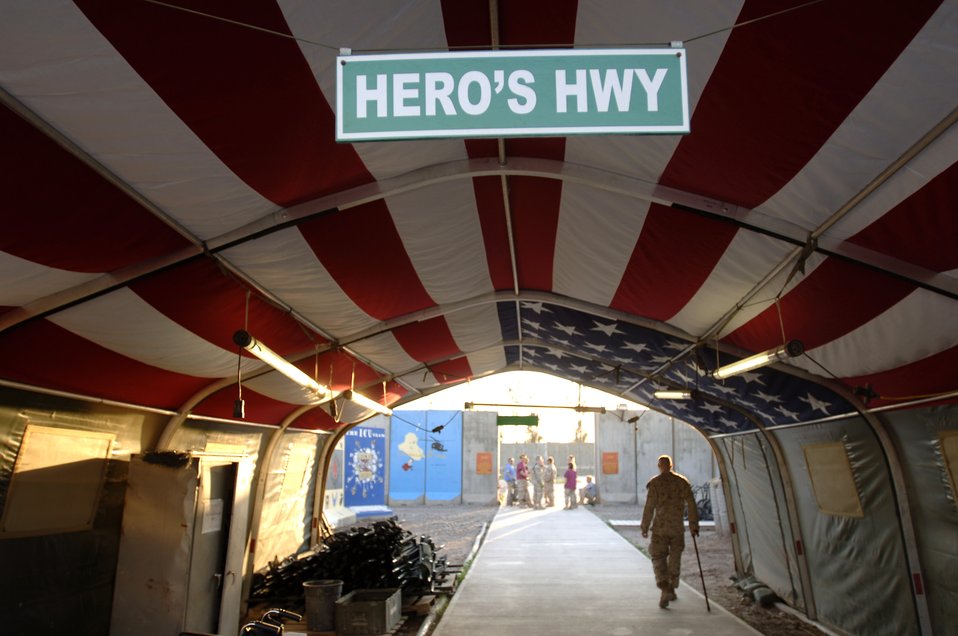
An avenue for heroes

During an average month, hundreds of wounded servicemembers pass under the American flag-emblazed canopy known as Hero's Highway at the Air Force Theater Hospital at Balad Air Base, Iraq. Ninety eight percent of the patients treated at this hospital survive.